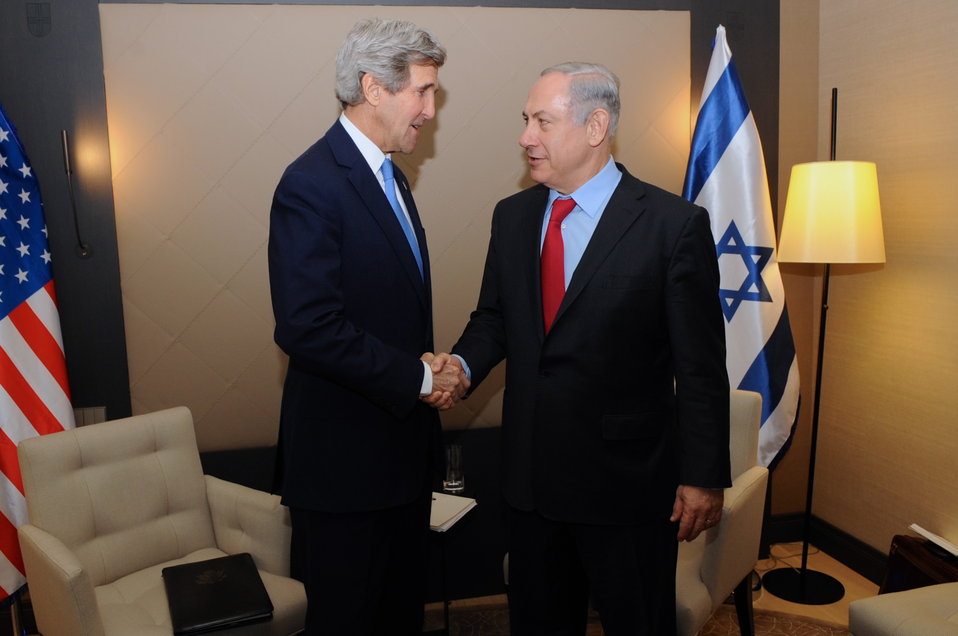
Secretary Kerry Shakes Hands With Israeli Prime Minister Netanyahu in Davos

U.S. Secretary of State John Kerry shakes hands with Israeli Prime Minister Benjamin Netanyahu before a one-on-one meeting on the sidelines of the World Economic Forum in Davos, Switzerland, on January 24, 2014.